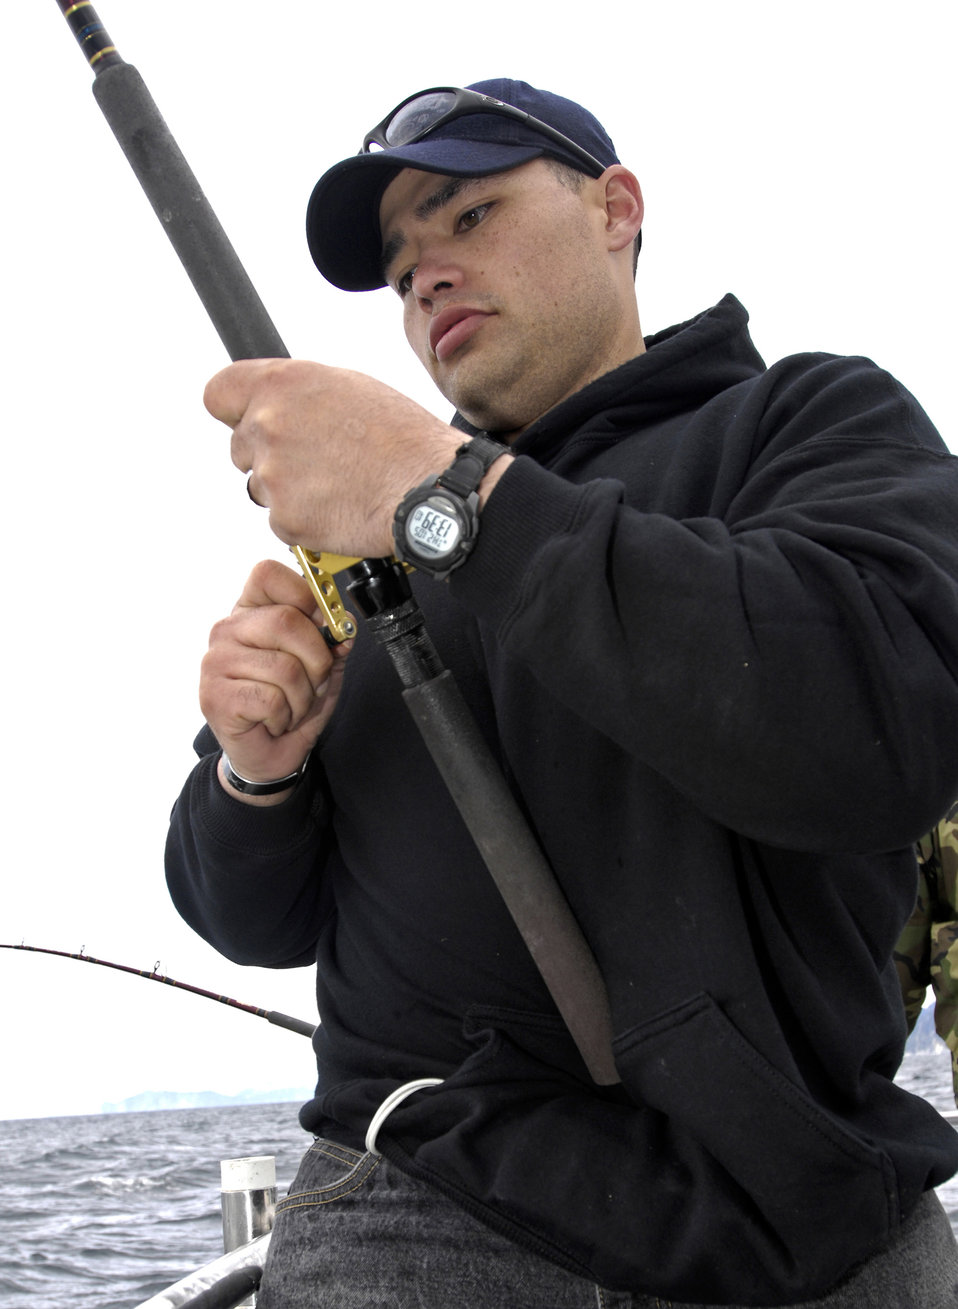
Fishing community gives back to military

Dave Mondok reels in a fish May 21 in Seward, Alaska. Mr. Mondok is assigned to the 40th Cavalry Combat Medical Group at Fort Richardson, Alaska. He was deployed to Baghdad, Iraq, from 2006 to 2007. The tournament, sponsored by the Armed Services YMCA and the Seward Charter Association, is a free day of halibut charter fishing mainly for veterans of the Iraq and Afghanistan wars.